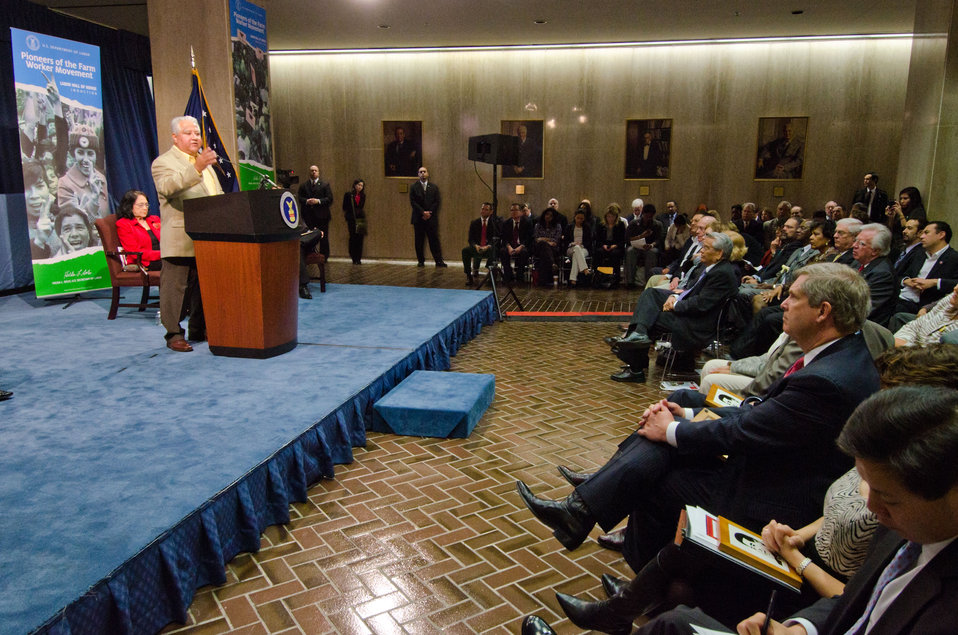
Paul Chavez, son of farm labor leader Cesar Chavez reflected on his father's non-violent methods to fight for the rights of migrant farm workers in the southwestern United States during the dedication of the Cesar E. Chavez Memorial Auditorium at the United States Department of Labor in Washington, D.C., Monday, March 26, 2012. Chavez's father founded the Cesar Chavez Foundation, a group that advocates for the rights of farm workers, acting to increase wages and improve the working conditions and safety of farm workers.